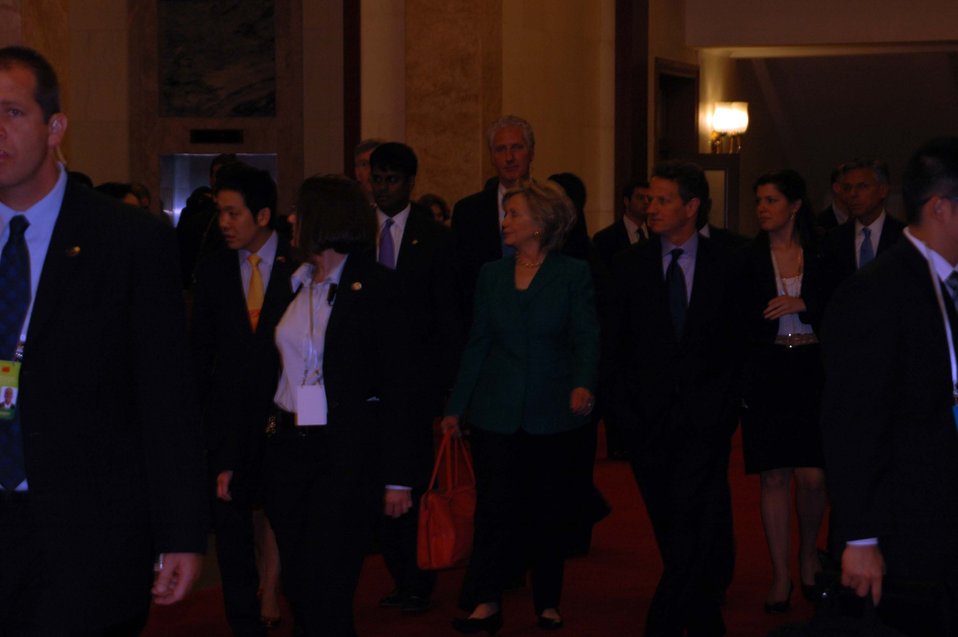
Secretary Clinton and Secretary Geithner Arrive for the Strategic and Economic Dialogue

U.S. Secretary of State Hillary Rodham Clinton, left, and U.S. Secretary of the Treasury Timothy Geithner arrive for a family photo with U.S. and Chinese officials at the Great Hall of the People in Beijing on May 24, 2010, during the start of the second round of the China-U.S. Strategic and Economic Dialogue.